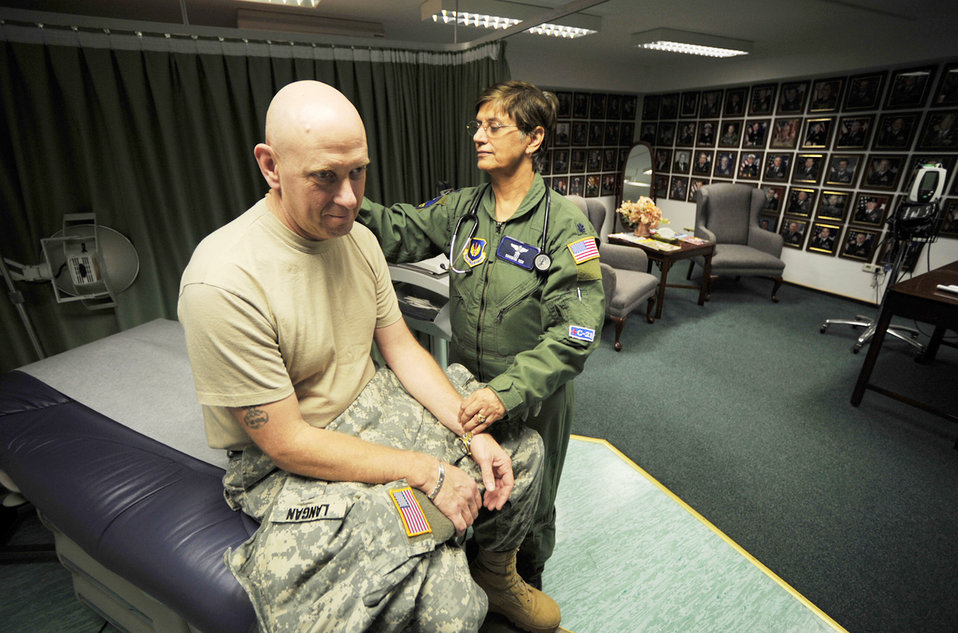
Medical professional save millions with common-sense concept

Army Col. William Langan gets a medical examination from Lt. Col. (Dr.) Shobha Sem during the U.S. European Command European Strategy Conference March 2, 2010, at Ramstein Air Base, Germany. Colonel Langan is assigned to the U.S. EUCOM Office of Defense Cooperation Cyprus and Doctor Sem is assigned to the 86th Medical Special Operations Clinc.